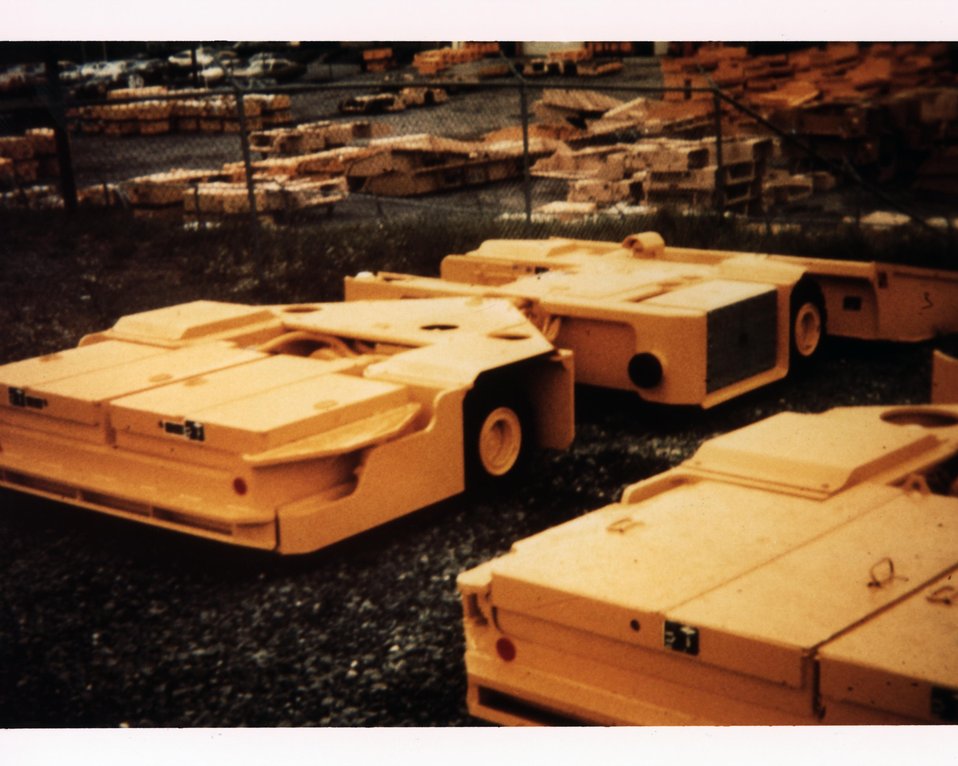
TYPICAL SCOOP USED IN UNDERGROUND COAL MINING TO TRANSPORT MEN AND MATERIALS AS WELL AS FOR CLEANUP WORK.

AN FE-NI BATTERY PACK WILL BE TESTED ON THIS VEHICLE TO PROVE THE HIGHER ENERGY DENSITY OF FE-NI BATTERIES OVER CONVENTIONAL LEAD-ACID BATTERIES.